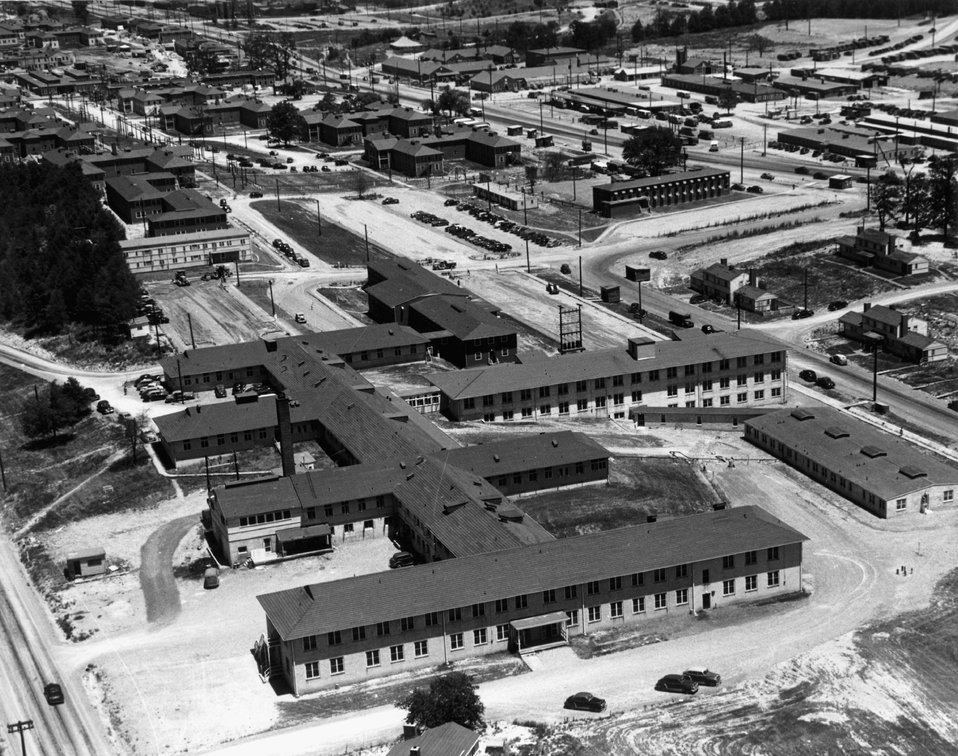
Oak Ridge Hospital. c. 1945